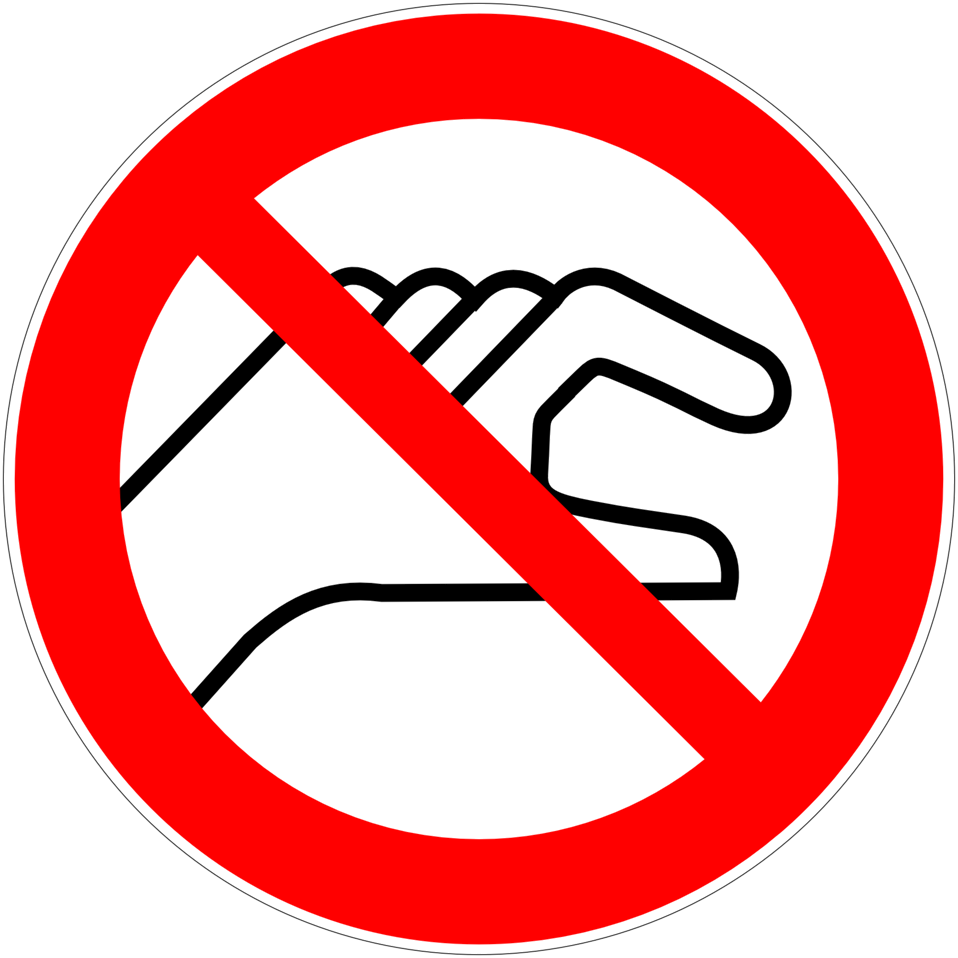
Deutsch: Hineinfassen verboten, Verbotszeichen D-P026 nach DIN 4844-2 Do not grip inside, prohibition sign D-P026 according to German standard DIN 4844-2